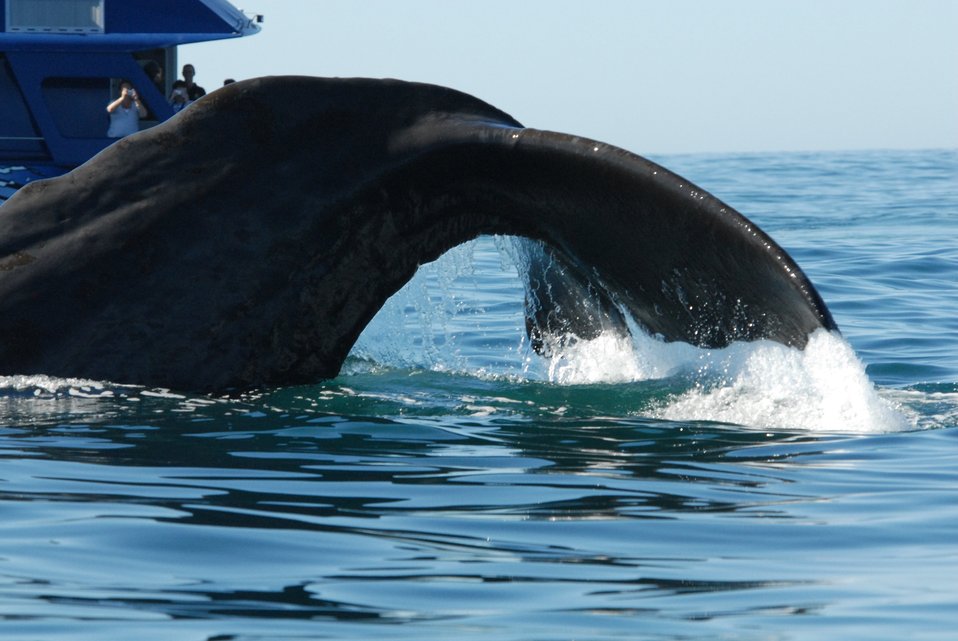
Tail of sperm whale at beginning of dive.